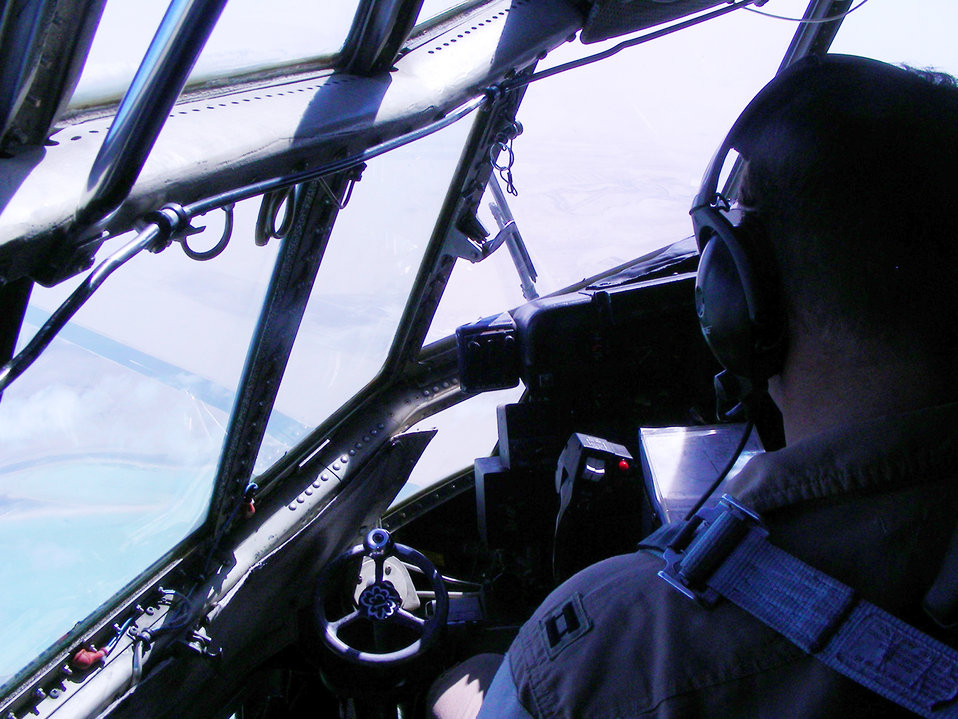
Pirate support

A deployed crew from the 911th Airlift Wing flies over an area near the Persian Gulf from an air base in Southwest Asia to support the ground battle in Marjah, Afghanistan, March 1, 2010. The C-130 Hercules has a Pittsburgh Pirate painted on the nose to show the wing's pride in their hometown of Pittsburgh.